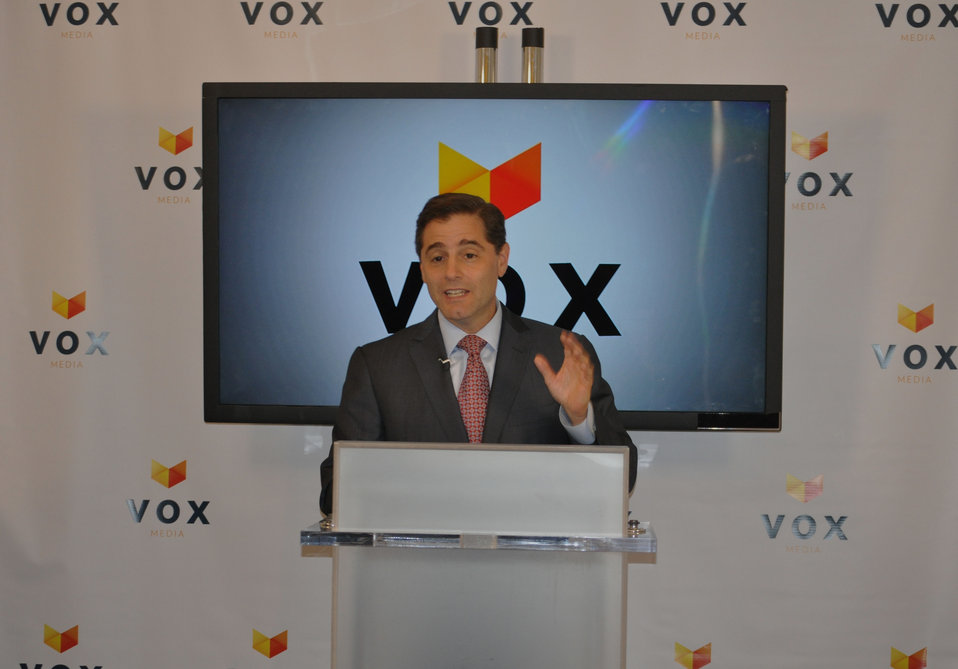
Broadband Challenges and Opportunities, at Vox Media - DSC 0697